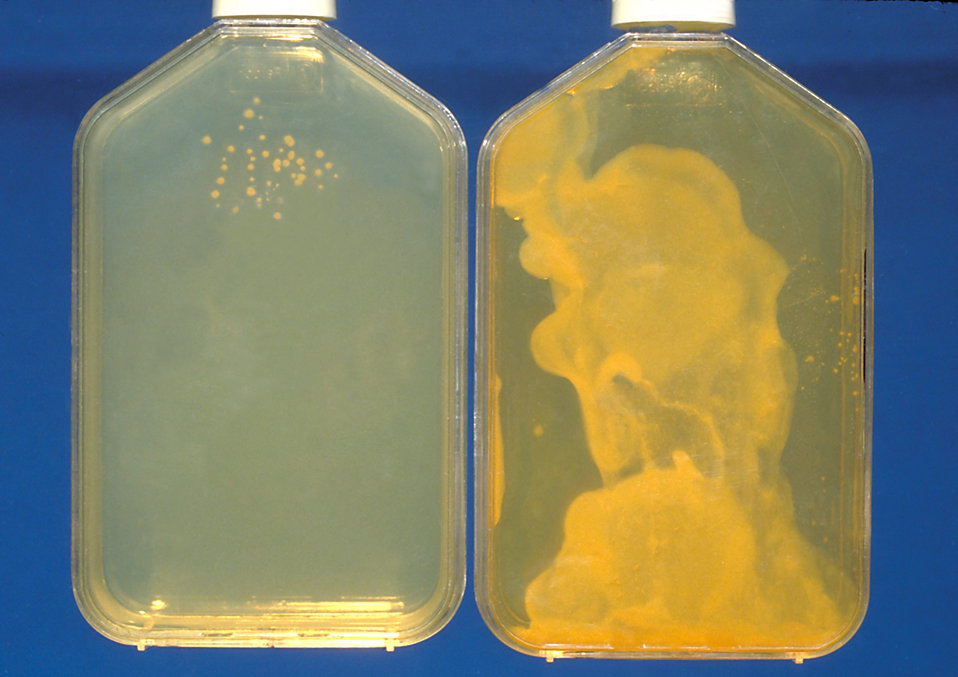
These were two differently concentrated sputum specimen cultures of Histoplasma capsulatum.